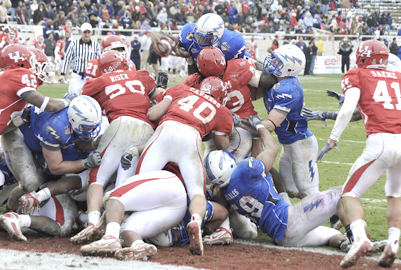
Falcons to play in Independence Bowl

Falcons sophomore quarterback Tim Jefferson goes airborne for a touchdown on fourth and goal from the 1 during the Bell Helicopter Armed Forces Bowl Dec. 31, 2009, in Fort Worth, Texas. Jefferson had 161 passing yards and 37 rushing yards in Air Force's 47-20 victory.